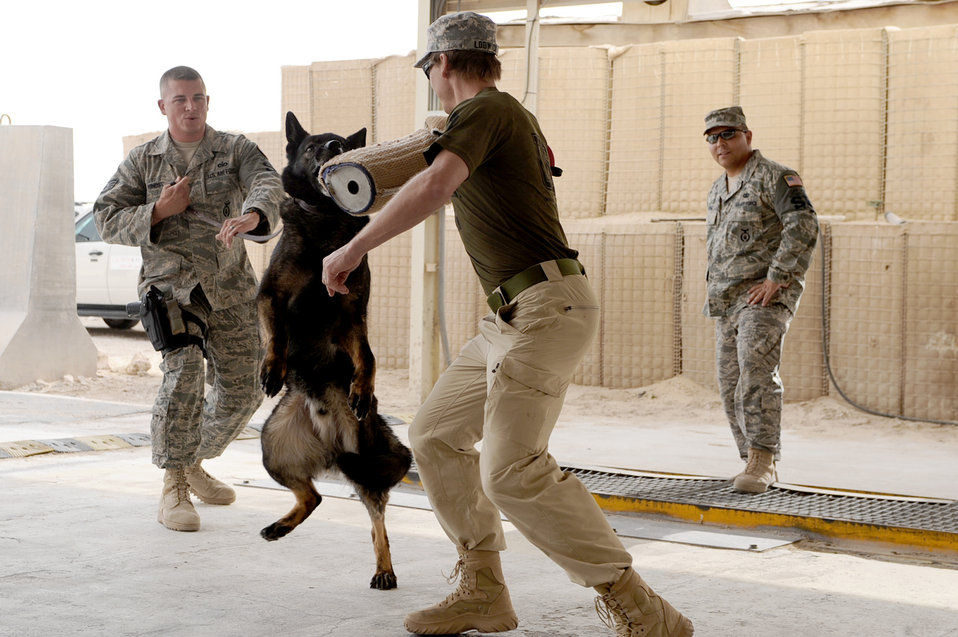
Front-line defenders

Staff Sgt. Christopher Hinds holds the leash of Ajax while 'attacking' Todd Lodwick, a visiting U.S. Olympic Ski Team medalist, during a demonstration April 9, 2010, at an air base in Southwest Asia. Sergeant Hines is a 379th Expeditionary Security Forces Squadron military working dog handler. Ajax is a 379 ESFS military working dog.